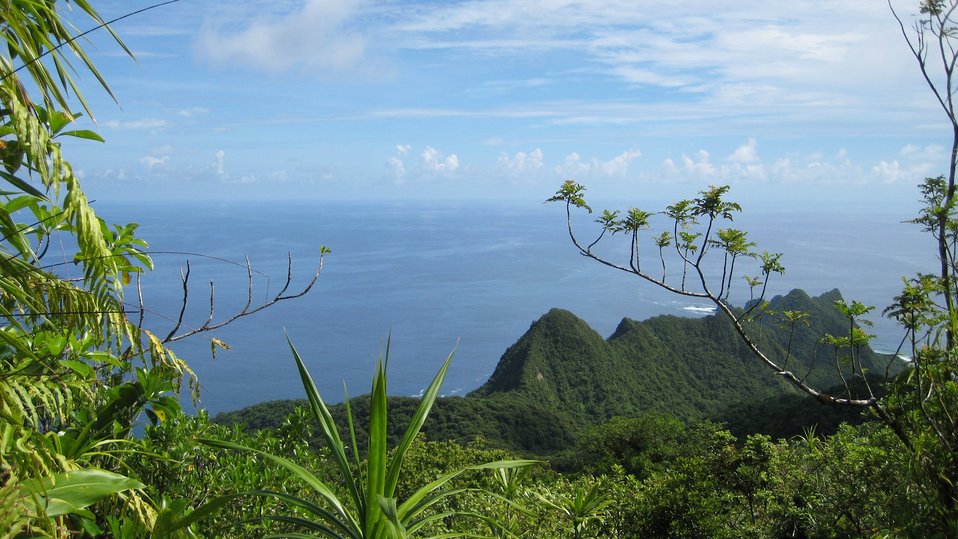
A view over the lush Samoan vegetation to the Pacific Ocean